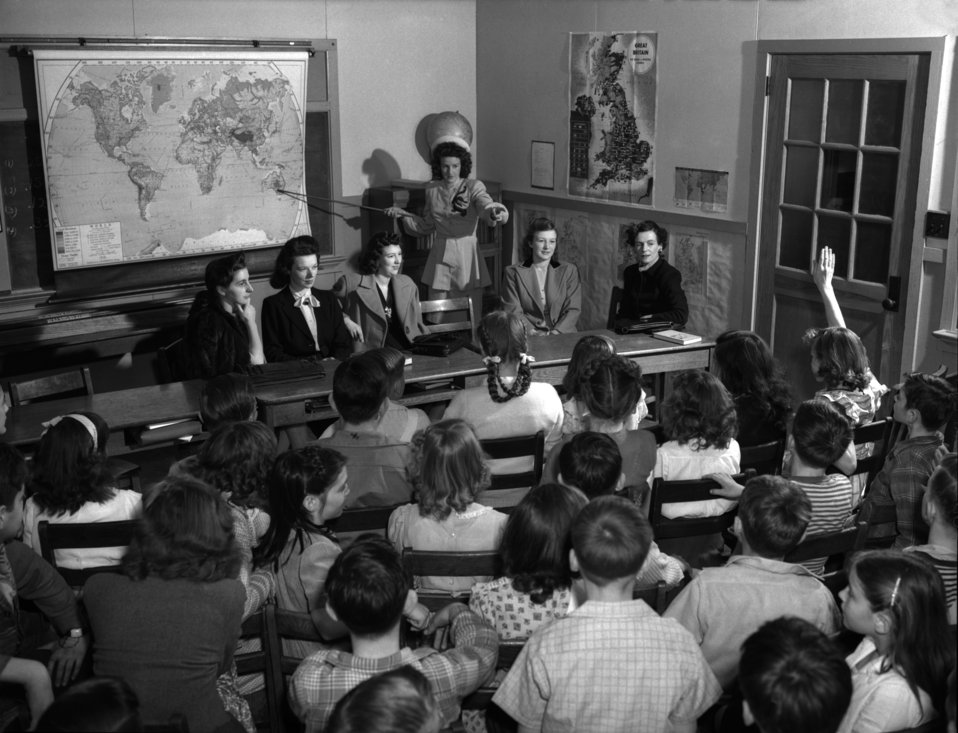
Linden School War Brides Answer Questions Oak Ridge

3351-2 DOE photo Ed Westcott 3-19-1947 Oak Ridge Tennessee